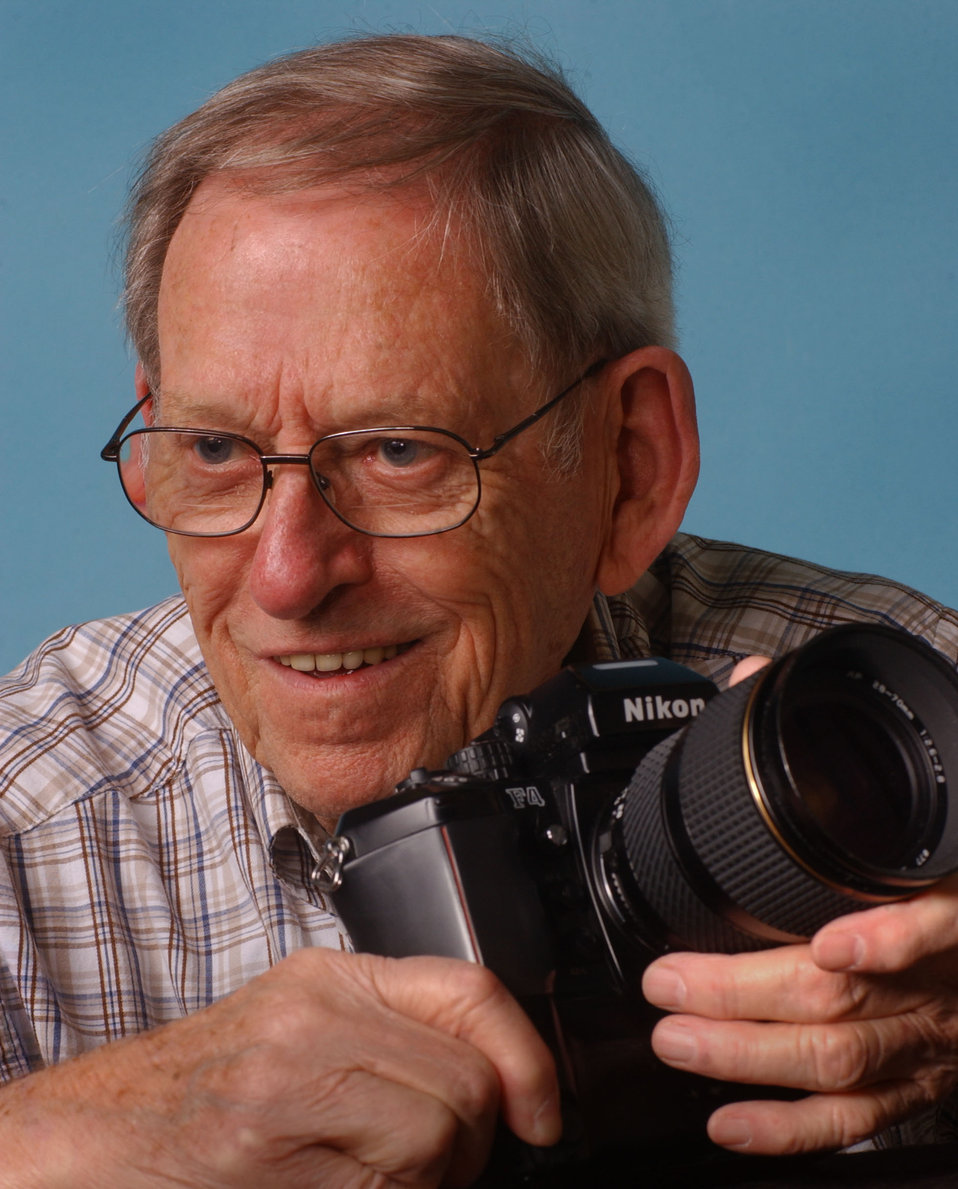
AEC Manhattan photographer Ed Westcott Oak Ridge

05-137c DOE photo by Lynn Freeny

AEC Manhattan photographer Ed Westcott Oak Ridge Tennessee 2005